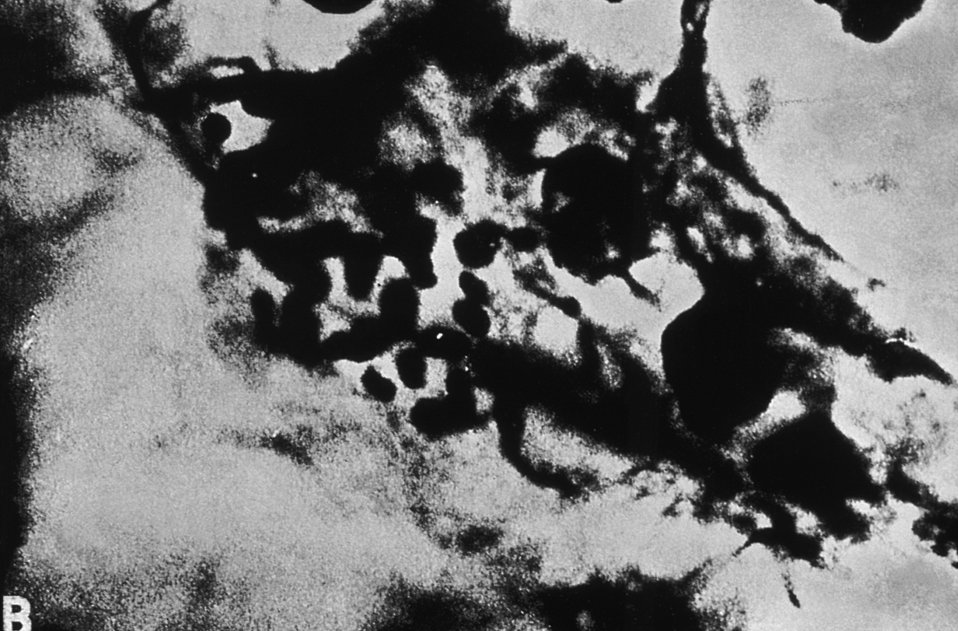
Processed using Dieterle's silver stain, sometimes referred to as Pund's method, under photomicrographic examination, this image reveals the presence of numerous Donovan bodies, displaying their characteristic morphology described as a closed safety-pin appearance.